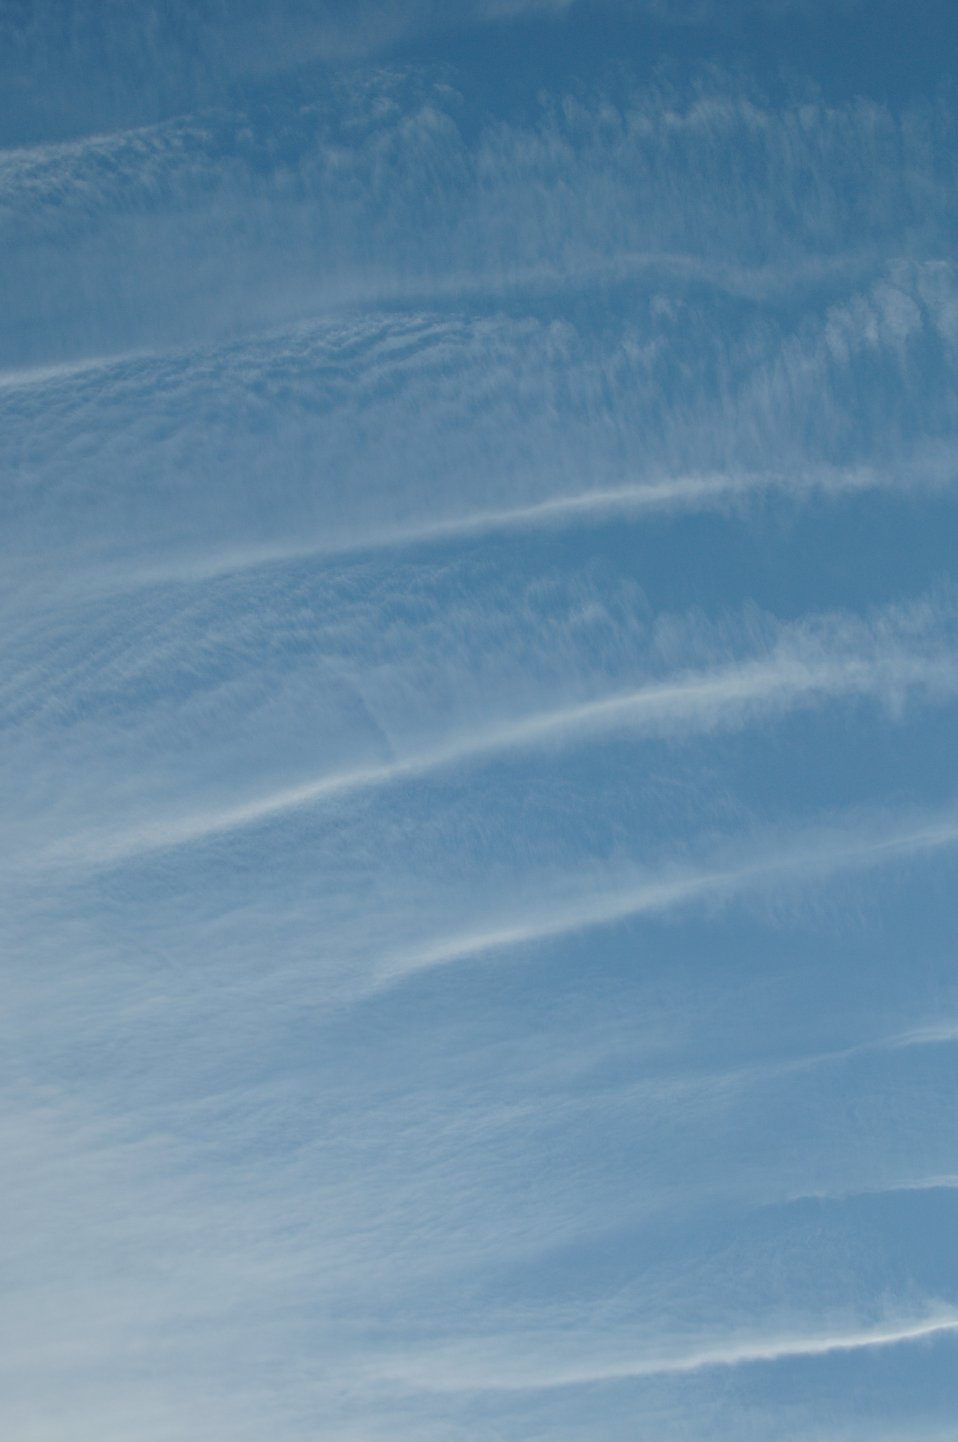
Gravity wave clouds forming over the Front Range of the Rocky Mountains.